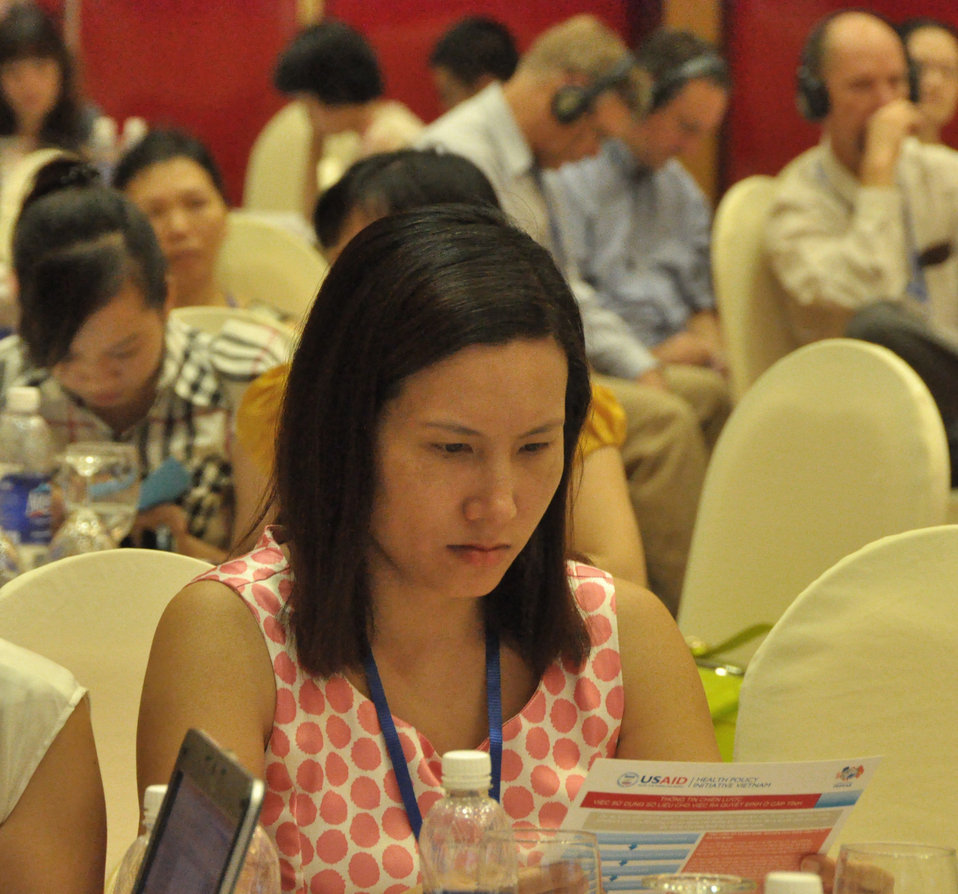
USAID Health Policy Initiative End of Project Workshop

Hanoi, August 14, 2013.